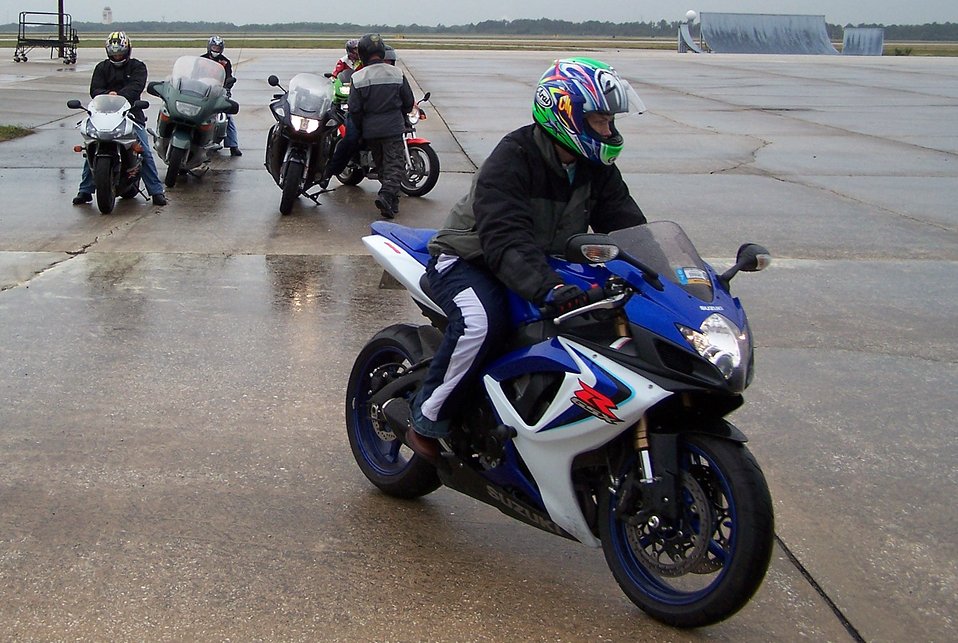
Officials emphasizes motorcycle safety across force

Motorcycle accidents are on the rise throughout the Department of Defense and officials want to stress safety as the summer months approach. The Air Force holds courses for all Airmen who ride motorcycles to promote safety and encourage safe riding habits.